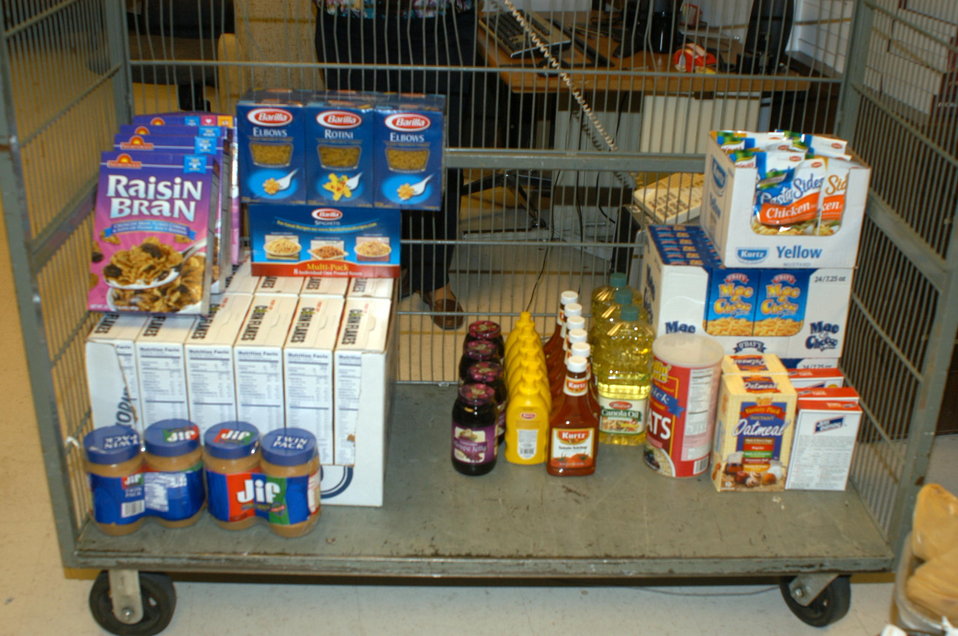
Sierra Exif JPEG